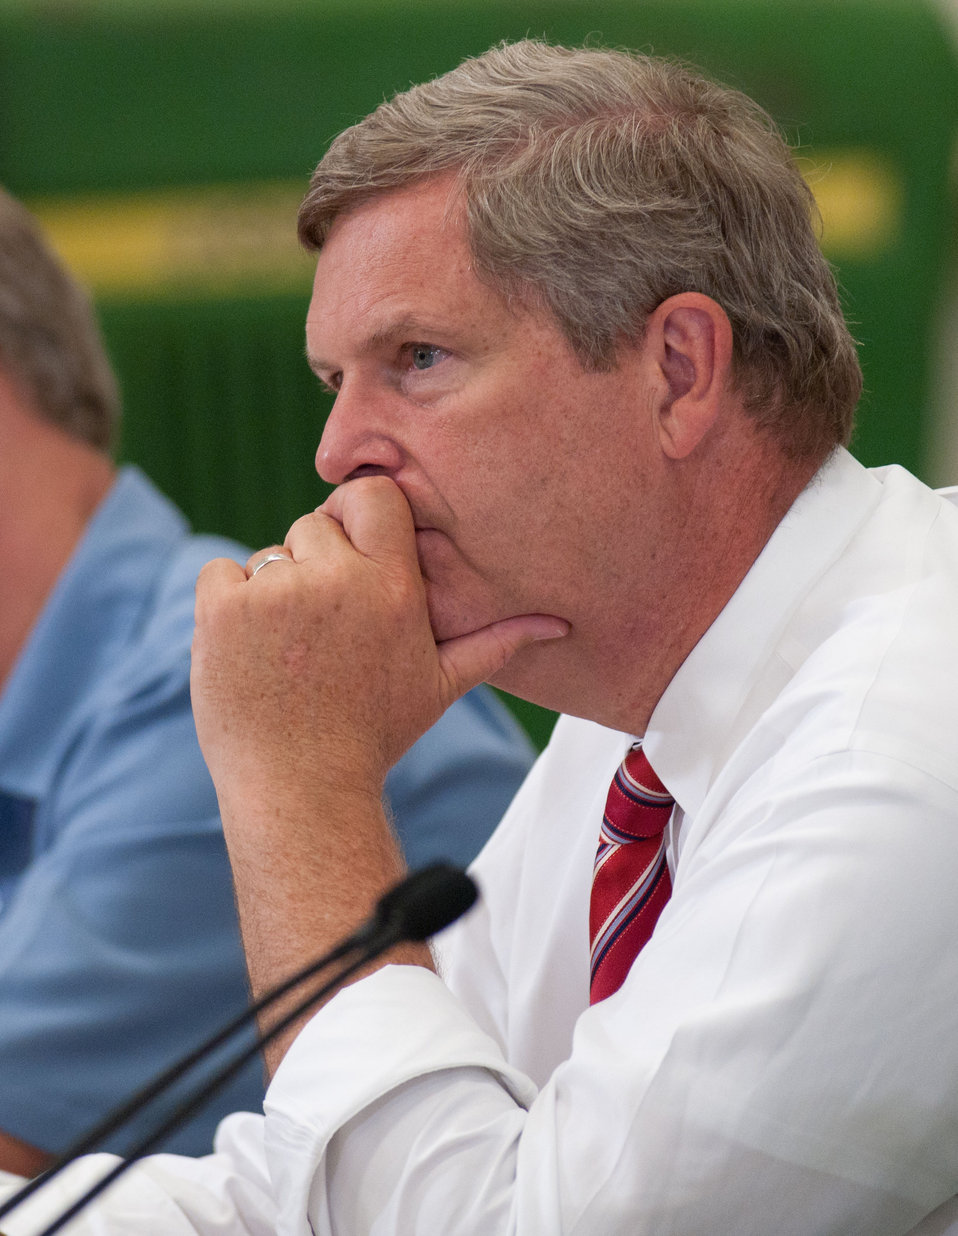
U.S. Department of Agriculture Secretary and chair of the White House Rural Council, Tom Vilsack, (right center) meets with Iowa stakeholders at the Northeast Iowa Community College, IA, during the White House Rural Economic Forum, on Tuesday, August 16, 2011.